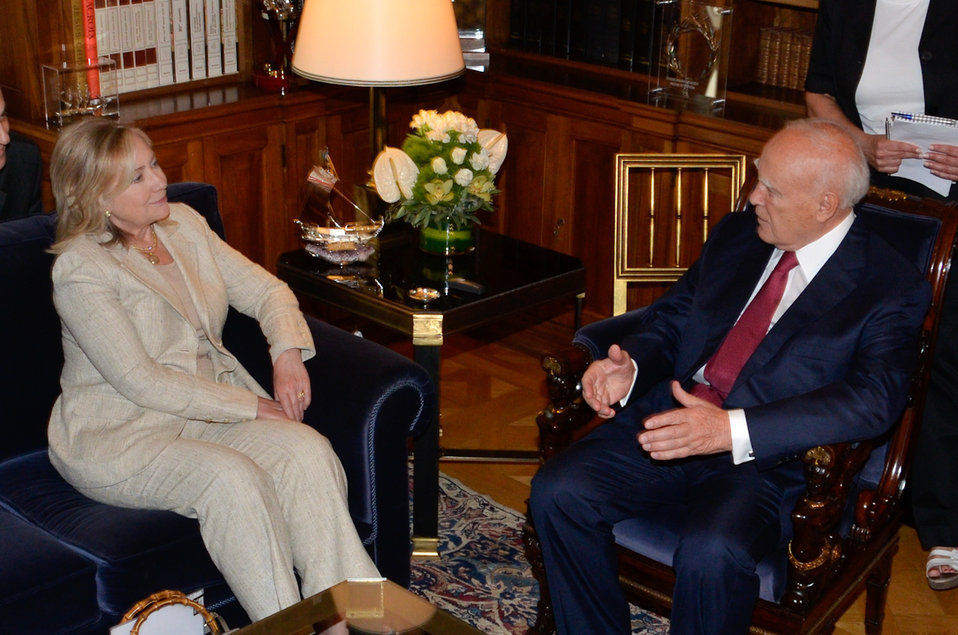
Secretary Clinton Meets With Greek President Papoulias

U.S. Secretary of State Hillary Rodham Clinton meets with Greek President President Karolos Papoulias in Athens, Greece, on July 17, 2011.